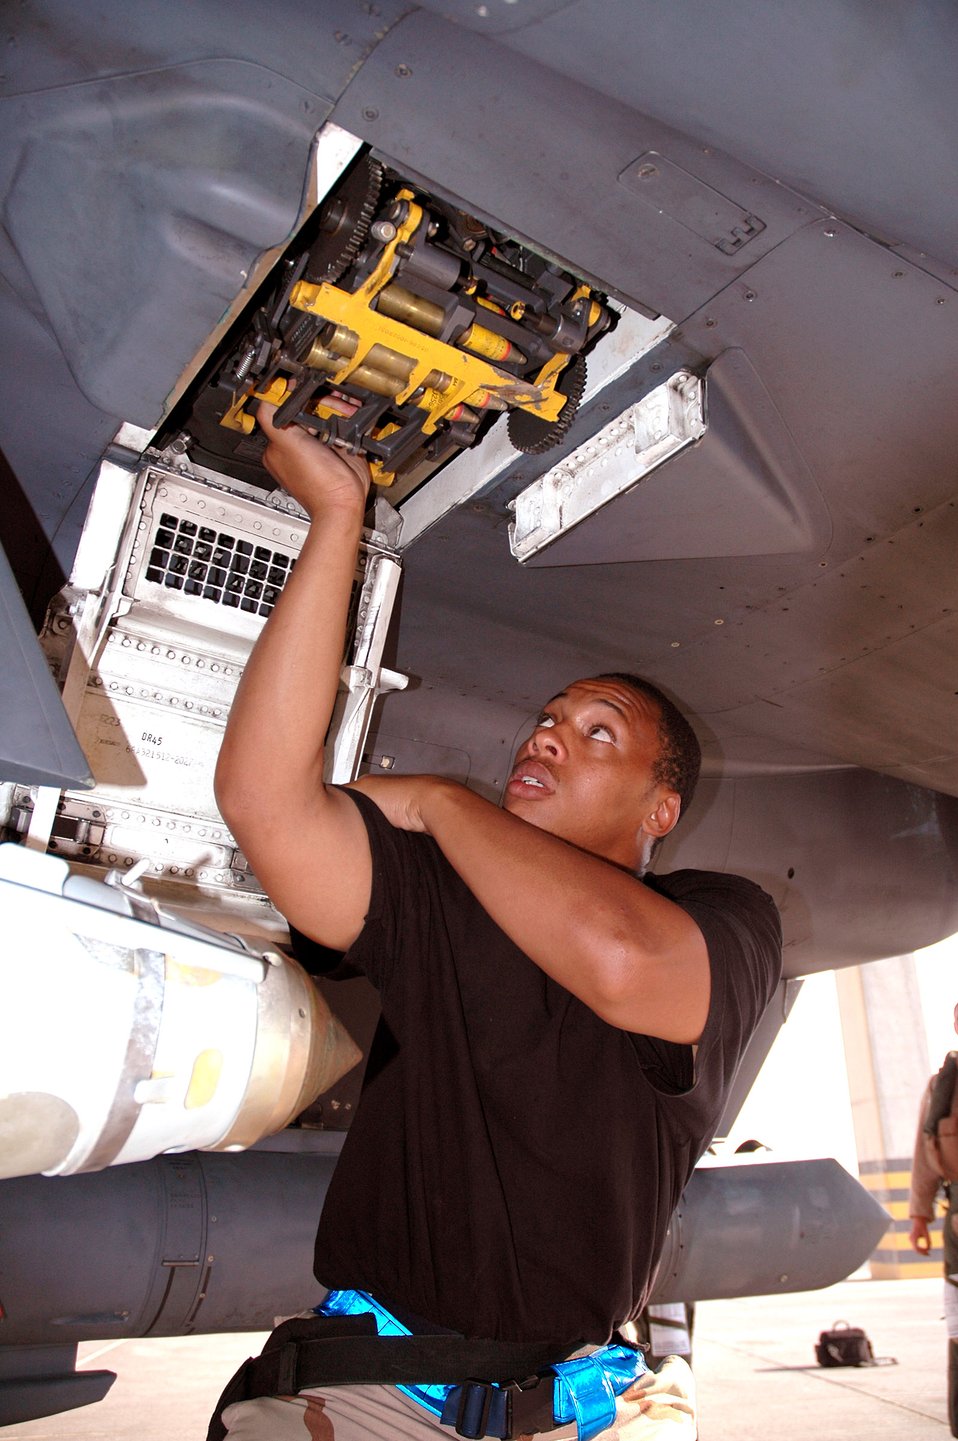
Gun check

FORWARD DEPLOYED LOCATION (AFPN) -- Crew chief Staff Sgt. Aaron Blackwell checks the 20mm Gatling gun on an F-15E Strike Eagle here. The fighter is from the 492nd Expeditionary Fighter Squadron here.